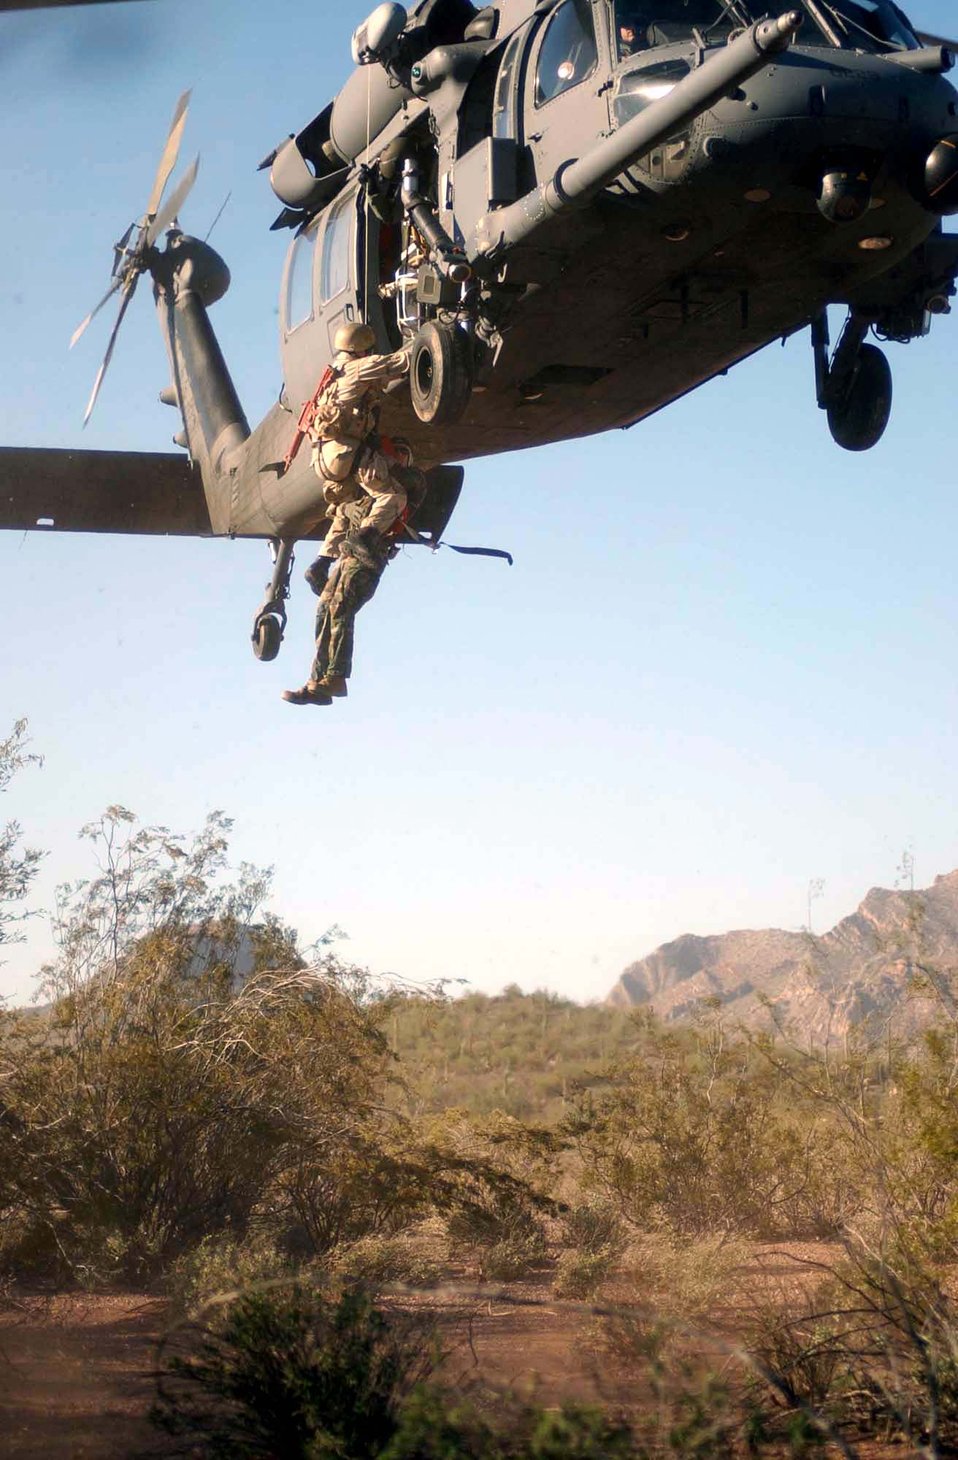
Hoist 'em up

NEAR TUCSON, Ariz -- Pararescuemen from the 304th Rescue Squadron at the Portland Air National Guard Base, Ore., practice their rescue skills with an HH-60 Pave Hawk flown by a crew from the 305th RQS at nearby Davis-Monthan Air Force Base. During the exercise here, the 304th RQS Airmen practiced rescue scenarios and desert survival skills.